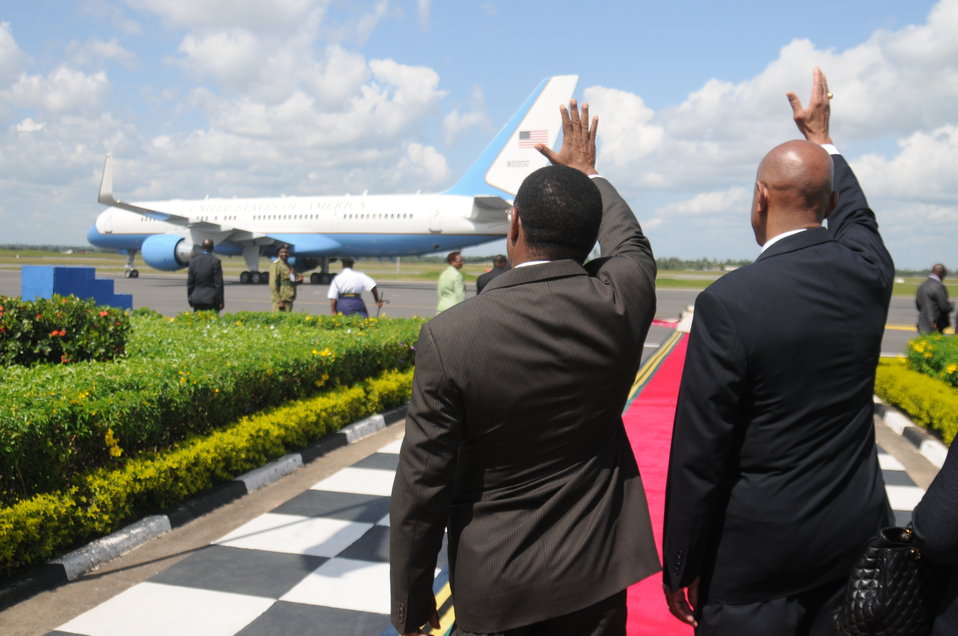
Ambassador Lenhardt and Tanzanian Foreign Affairs Minister Membe Wave Goodbye To Secretary Clinton

U.S. Ambassador to Tanzania Alfonso E. Lenhardt, right, and Tanzanian Foreign Affairs and International Cooperation Minister Bernard Membe, left, wave goodbye to U.S. Secretary of State Hillary Rodham Clinton at the Julius Nyerere International Airport in Dar es Salaam, Tanzania, on June 13, 2011.